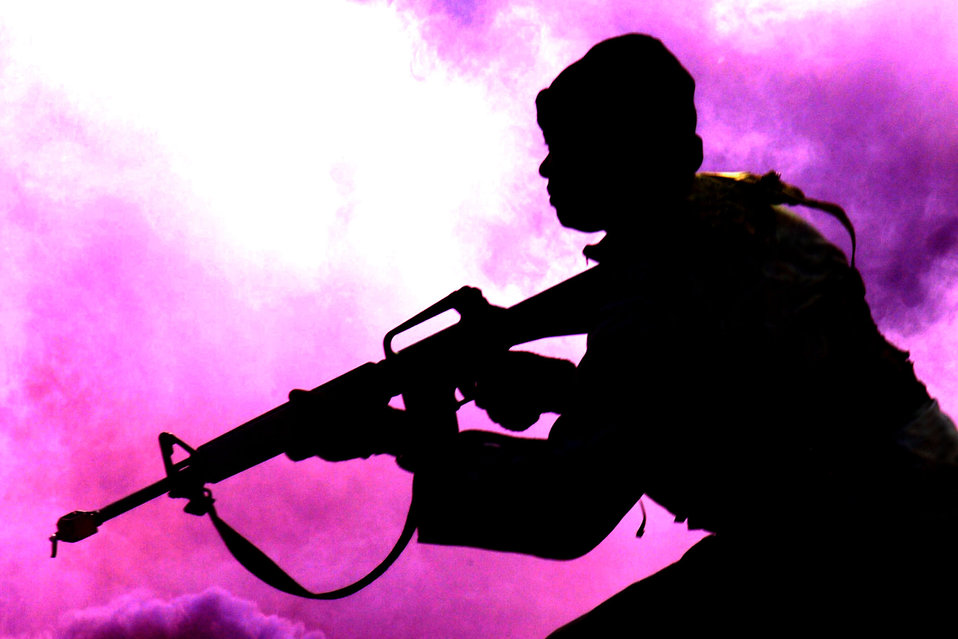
Purple haze

OSAN AIR BASE, South Korea - Tech. Sgt. Winfred Harris takes cover in the smoke during a simulated convoy attack for an exercise here Oct. 28. Sergeant Harris is assigned to the 51st Fighter Wing.